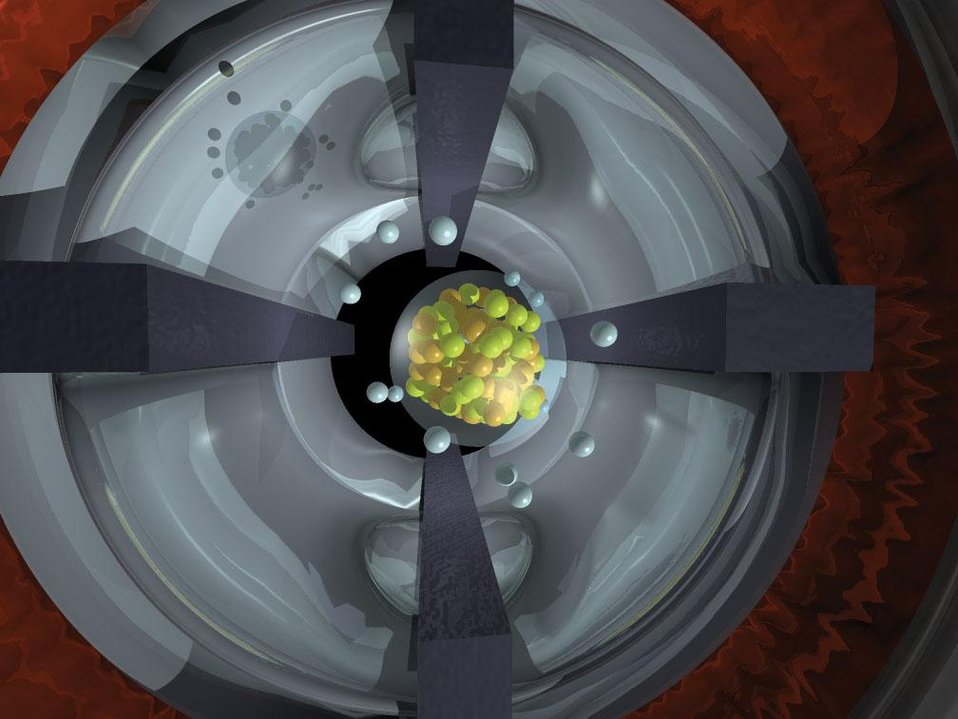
SIMULATION OF ONE OF NUMEROUS AMERICIUM-243 TARGET ATOMS WITH A NUCLEUS OF PROTONS AND NEUTRONS SURROUNDED BY AN ELECTRON CLOUD.

SCIENTISTS AT DOE'S LAWRENCE LIVERMORE NATIONAL LABORATORY, IN COLLABORATION WITH RESEARCHERS FROM THE JOINT INSTITUTE OF NUCLEAR RESEARCH (JINR) IN RUSSIA, HAVE DISCOVERED THE TWO NEWEST SUPER-HEAVY ELEMENTS, ELEMENT 113 AND ELEMENT 115. IN THESE DECAY CHAINS, ELEMENT 113 IS PRODUCED VIA THE ALPHA DECAY OF ELEMENT 115. THE EXPERIMENTS PRODUCED FOUR ATOMS EACH OF THE TWO ELEMENTS THROUGH THE FUSION REACTION OF CALCIUM-48 NUCLEI IMPINGING ON AN AMERICIUM-243 TARGET.